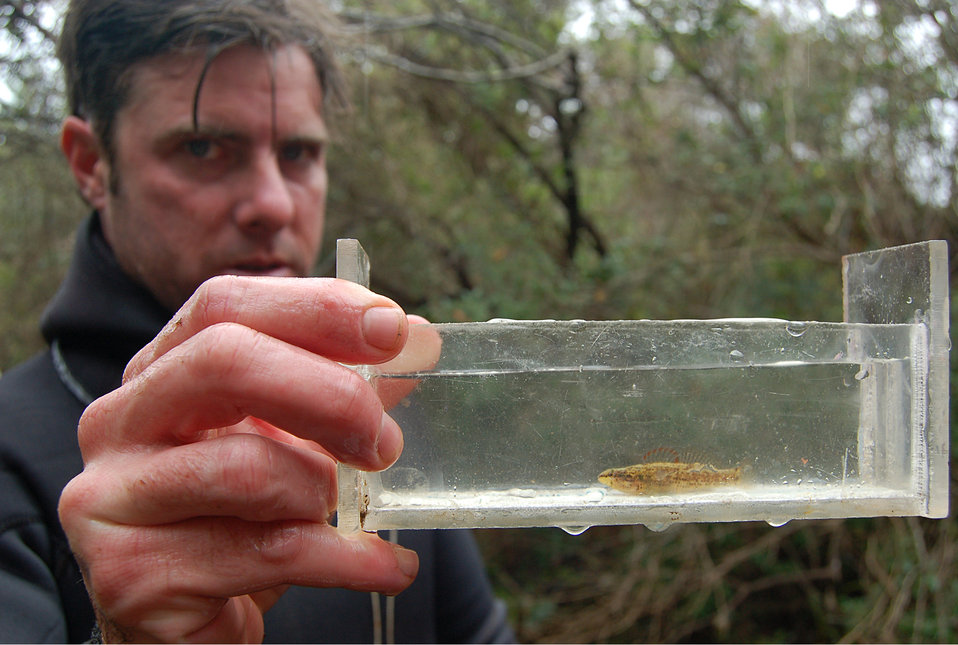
Environmental accomplishments

Bill Tate, a U.S. Fish and Wildlife Service employee, holds an endangered Okaloosa darter during a sampling session. Christened a